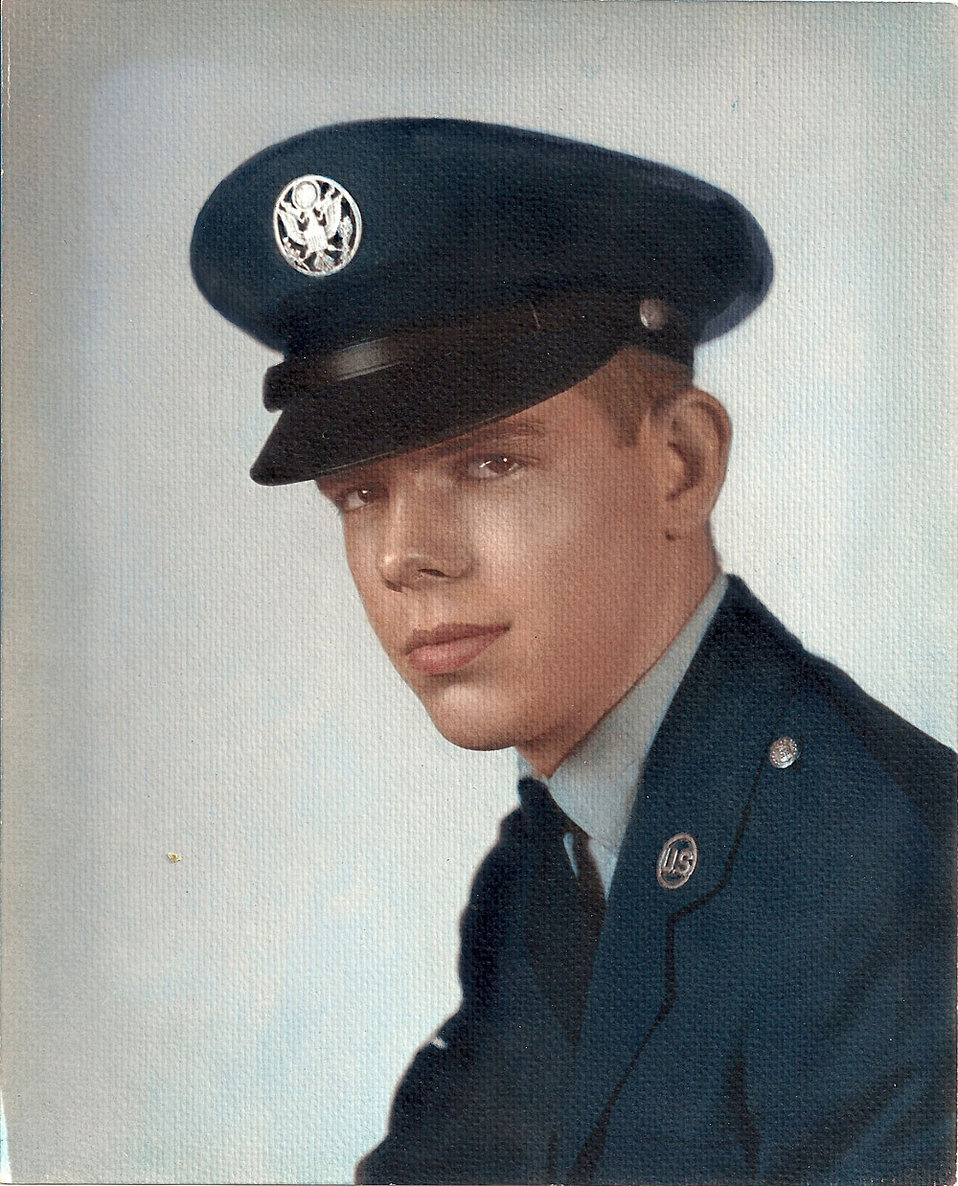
William Conlin served in the U.S. Air Force from 1965 to 1969. He provided aircraft maintenance on hydraulic systems on cargo and fighter aircraft. Conlin served in a rapid mobility C-130 squadron responsible for responding to various emergencies and also spent a year in Vietnam during the time of the Tet Offensive. He now works in the Program Reporting Branch for the Wildlife and Sport Fish Restoration Program.